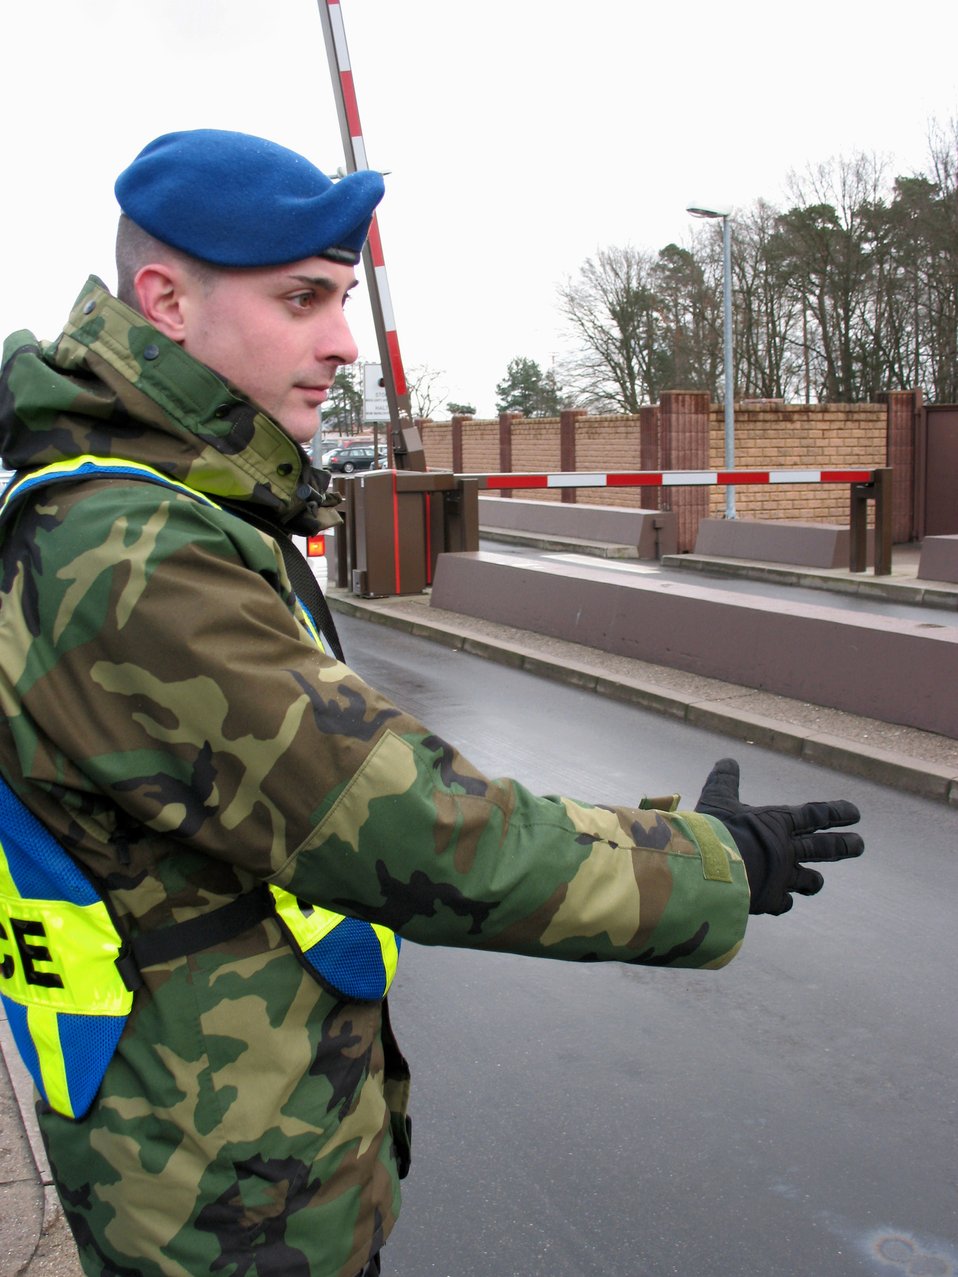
German ZPs invaluable asset at Ramstein

German civilian security police member, ZP-3 Mark Beysiegel, helps traffic run smoothly into Ramstein Air Base, Germany. ZPs are fully integrated into security forces flights, working side by side, and in some cases, training Airmen.